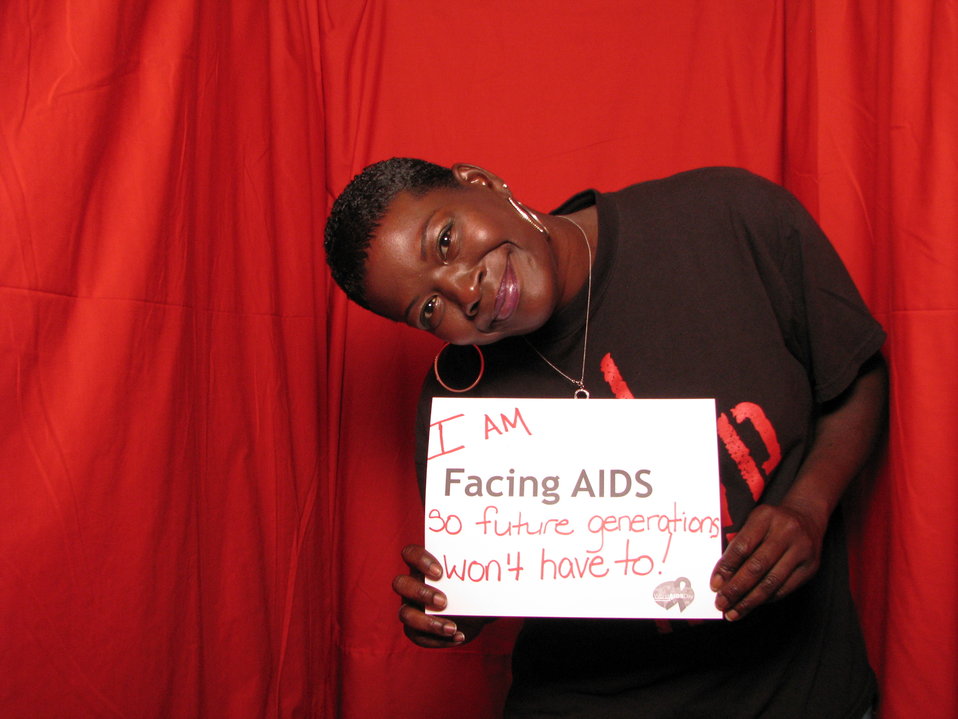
I AM FACING AIDS so future generations won't have to!

From the AIDS.gov photo booth at the U.S. Conference on AIDS, September 2010 (Orlando, FL).